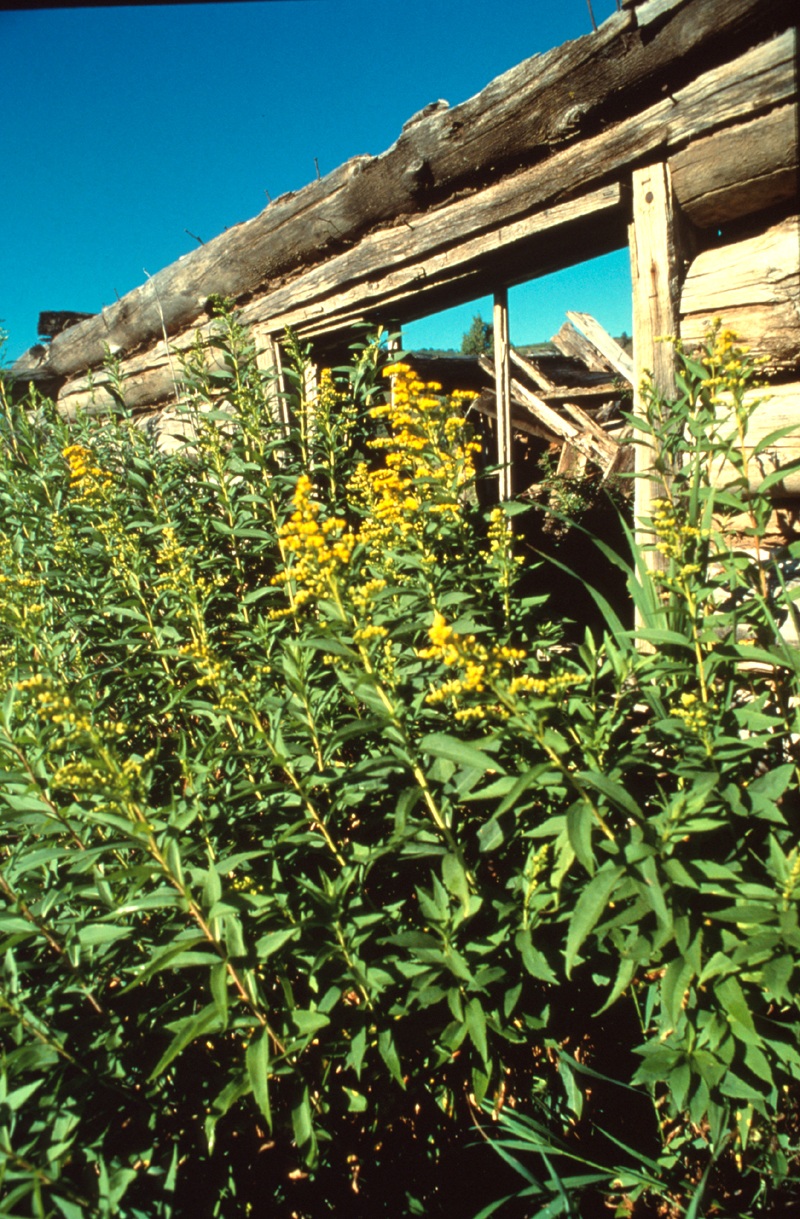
South Fork of the Snake River